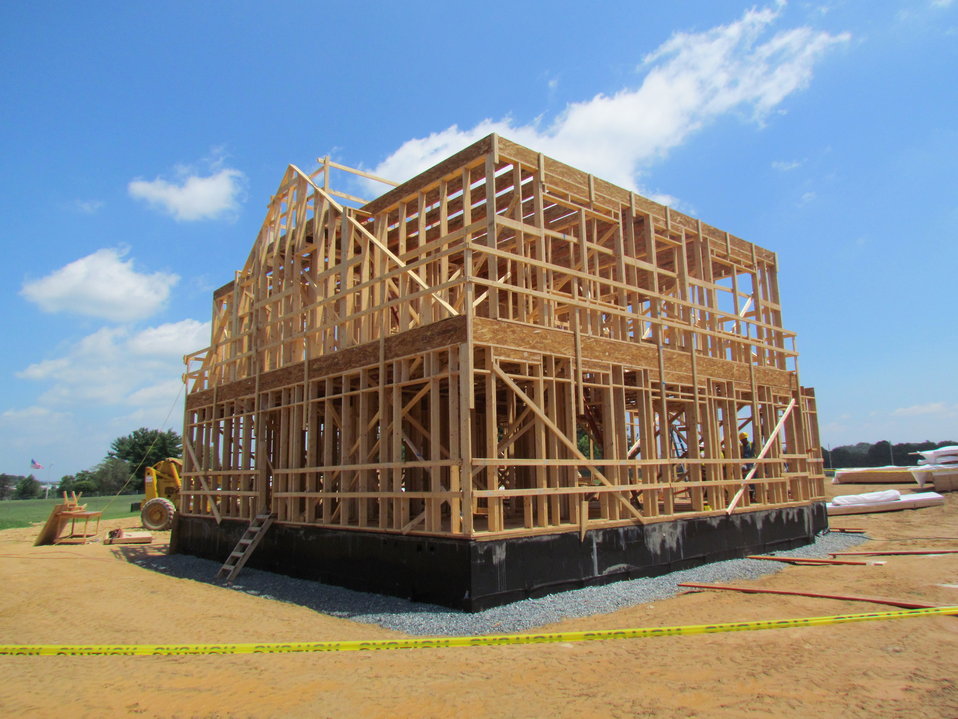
Net-Zero Energy Residential Test Facility - Picture showing completion of second floor framing.